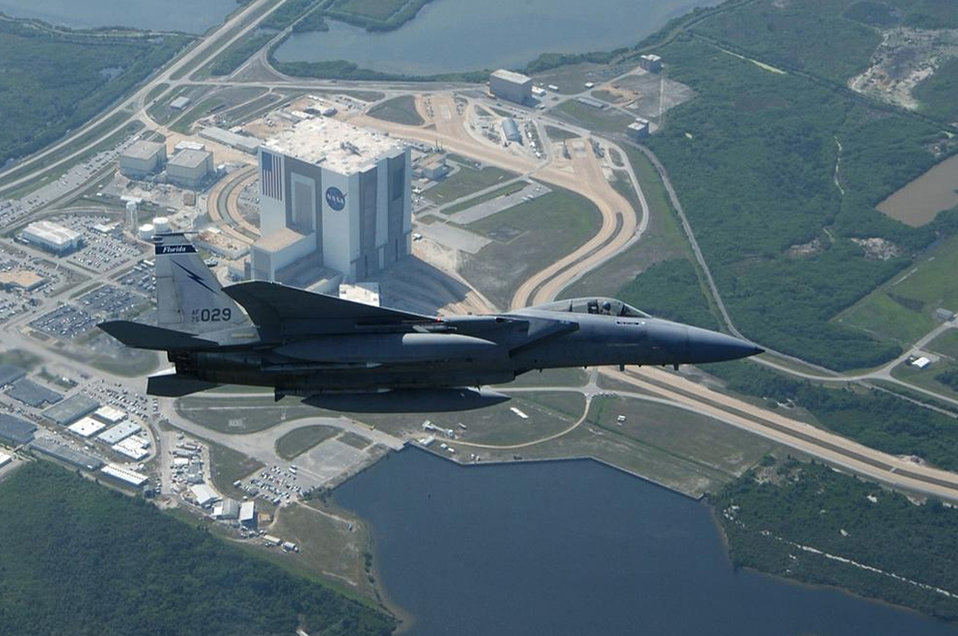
Anticipation is backbone of homeland defense

An F-15 Fighting Falcon flies over NASA's Cape Canaveral. NORAD and NORTHCOM routinely provide military support to NASA shuttle launches, ensuring airspace safety and security for the launch and landing by enforcing the FAA's Temporary Flight Restriction zones. NORTHCOM is responsible for an area of operations that includes the United States, Canada and Mexico. The command serves as a